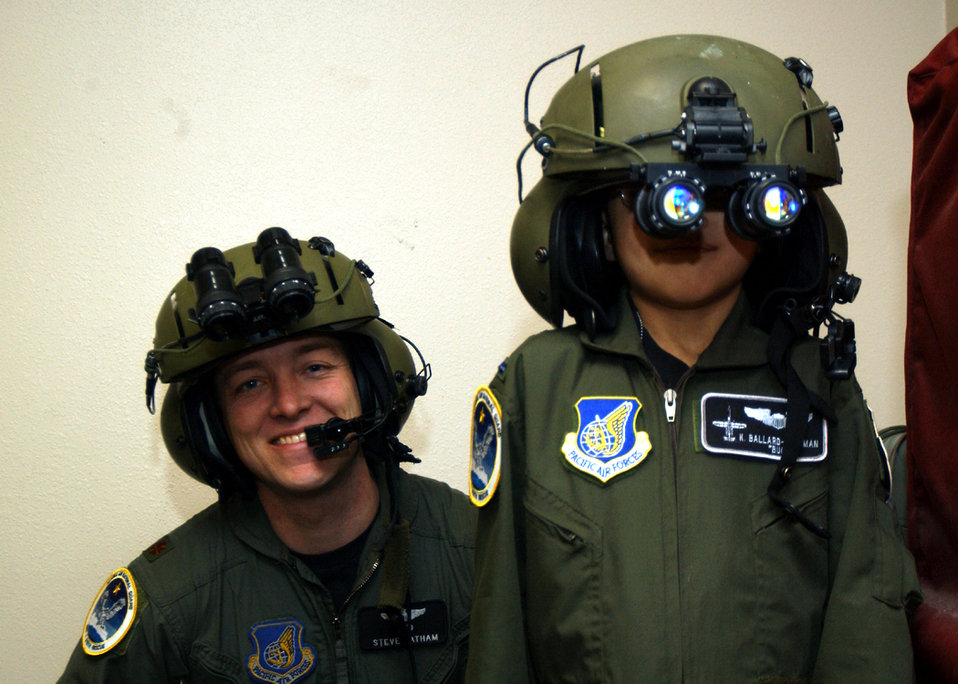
A young boy dressed as a pilot

Kameron Ballard-Huffman, the Fighter Pilot for a Day here March 18, tries on a set of night-vision goggles under the watchful eye of Maj. Steve Latham.